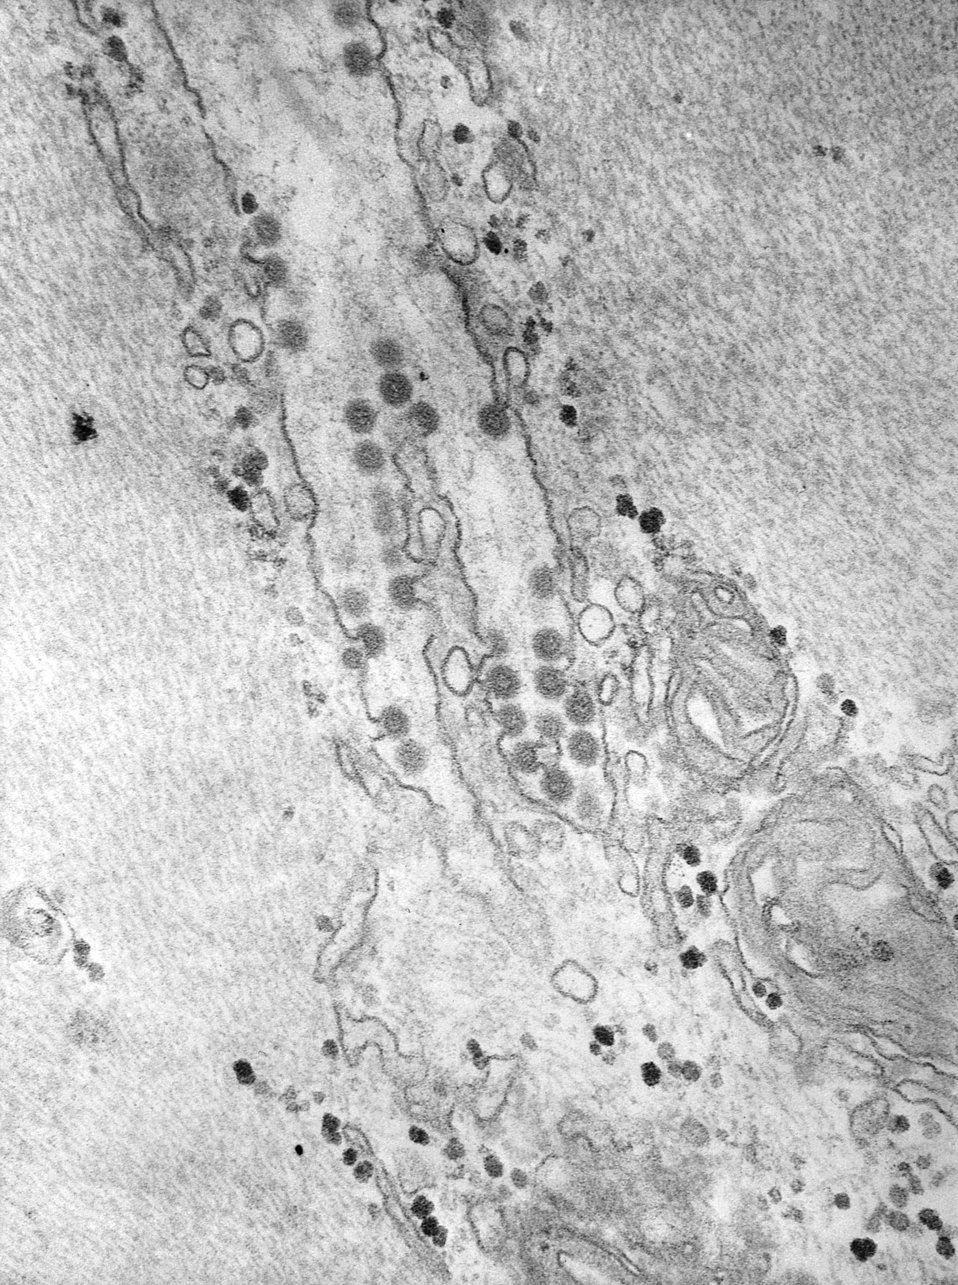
This negatively-stained transmission electron micrograph (TEM) revealed the presence of numerous Semliki Forest virus virions, which were present in a muscle tissue specimen. Named for the region in which they were isolate from mosquitoes, the Semliki Forest, Uganda, this virus is a Togaviridae family member, and the genus, Alphavirus.